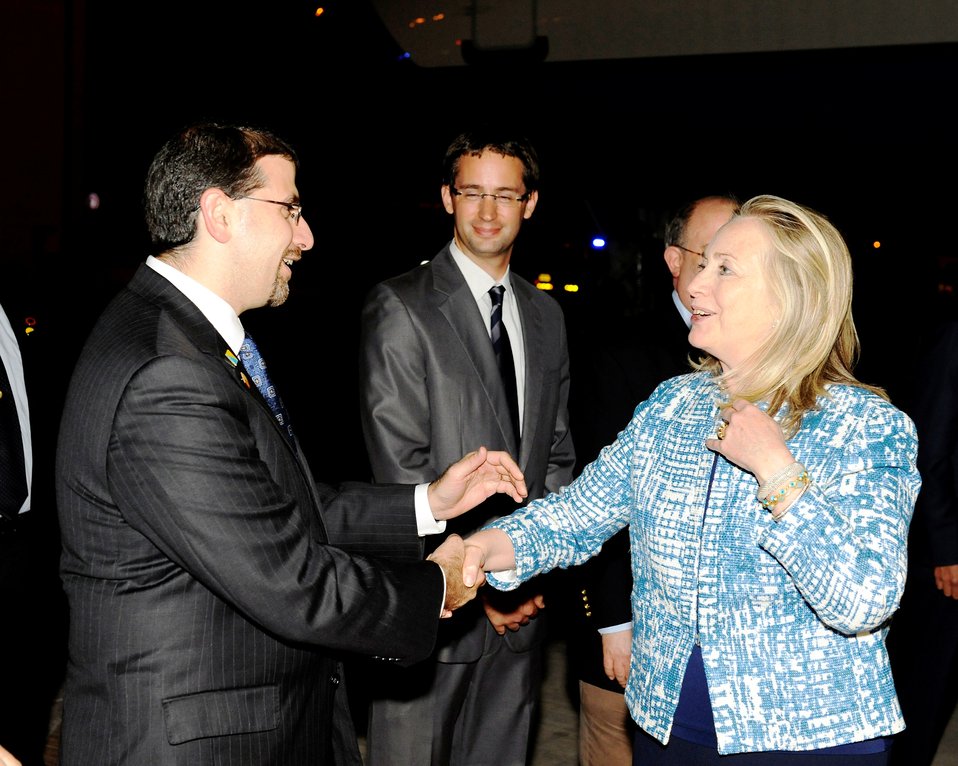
Secretary Clinton Is Greeted By Ambassador Shapiro

U.S. Secretary of State Hillary Clinton is greeted by U.S. Ambassador to Israel Daniel Shapiro upon arriving in Tel Aviv, Israel, on July 15, 2012.